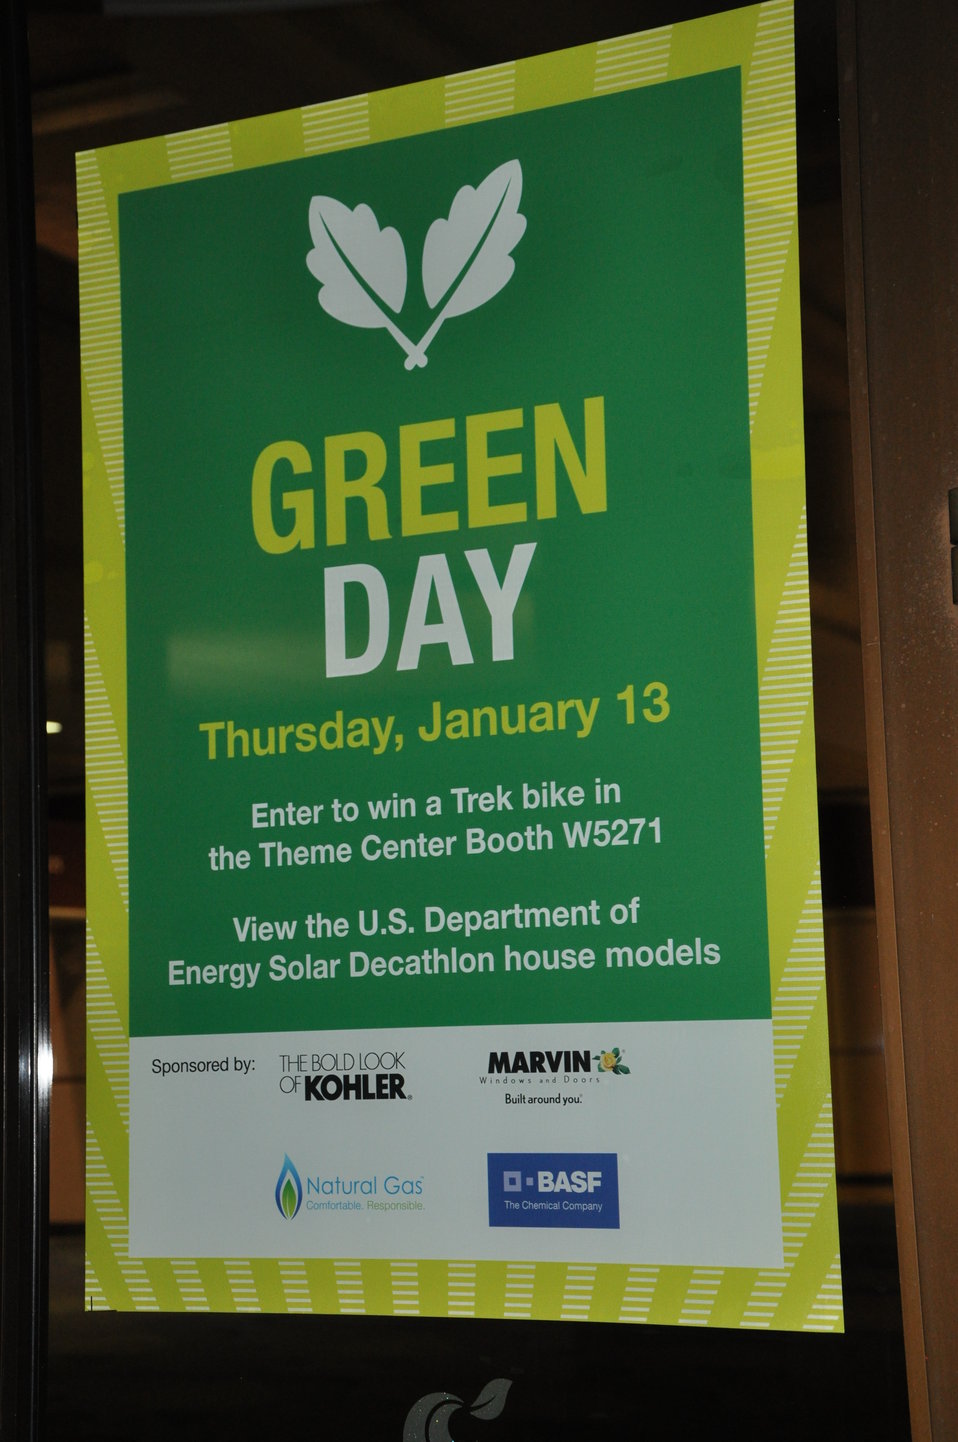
Green Day Banner